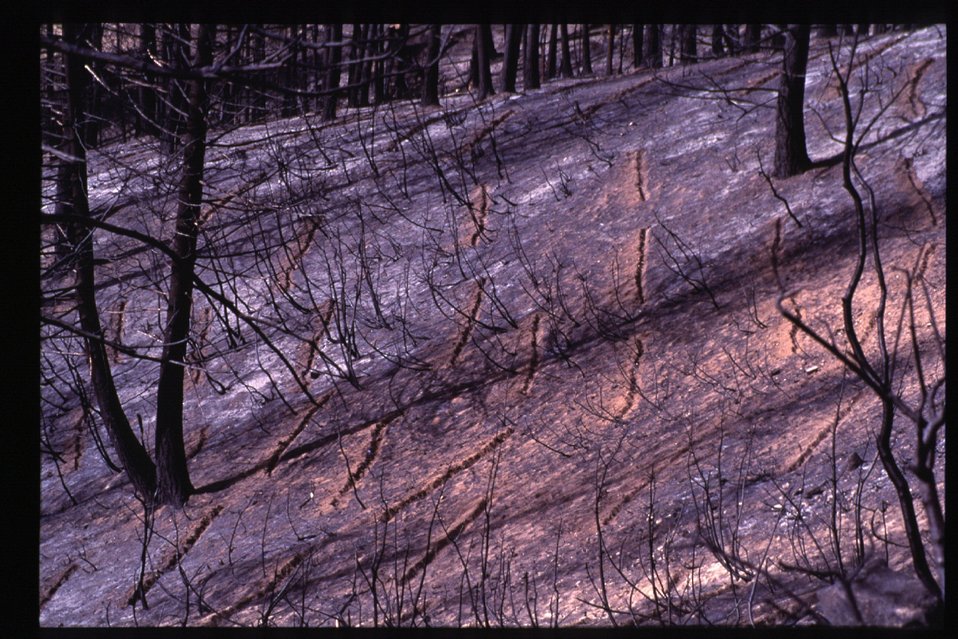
8th Street Fire Burnt trees Four Rivers Field Office LSRD Lower Snake River District